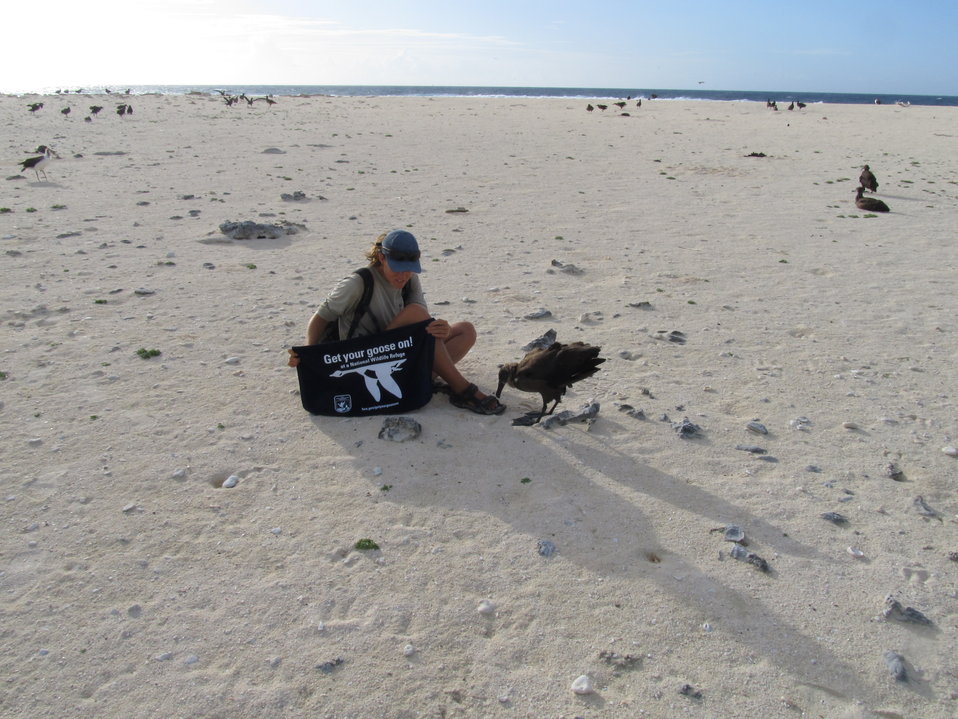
Get Your Goose On! - Albatross Style

Photo taken at Laysan Island in the Papahanaumokuakea Marine National Monument, Hawaiian Islands National Wildlife Refuge. Laysan is located approximately 800 miles northwest of Honolulu, Hawaii and is a remote field camp staffed year round for habitat restoration and population monitoring.